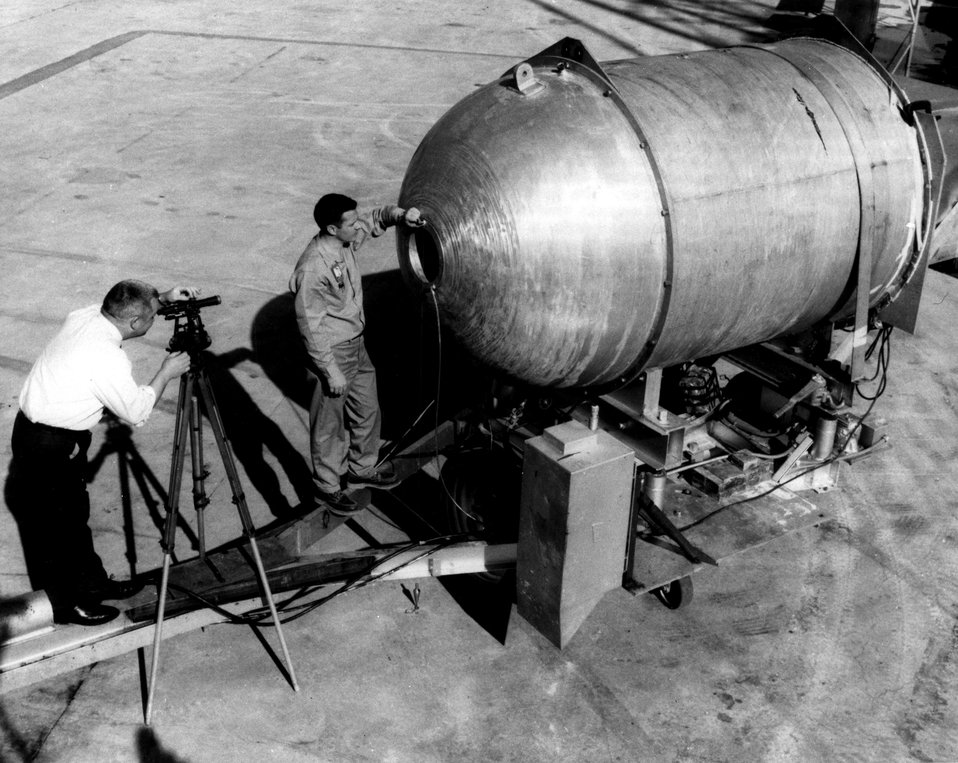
In a Tower Shielding Facility experiment designed to evaluate various sets of total neutron cross sections for oxygen and nitrogen, measurements were made of the energy spectra of fission neutrons transmitted through thick liquid samples of the elements. c. 1967